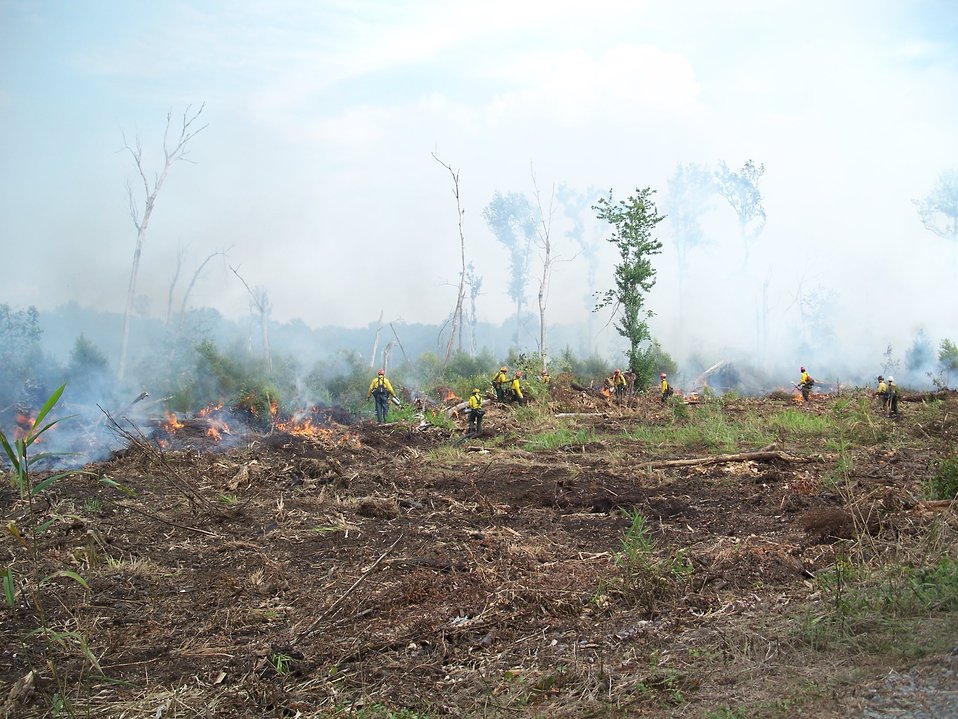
Using fire to fight fire

Suffolk, VA, August 2011: Firefighters burn along West Ditch Road at the Lateral West Fire on Great Dismal Swamp National Wildlife Refuge. The burning removes burnable material between the containment line and the fire front so the fire is contained.